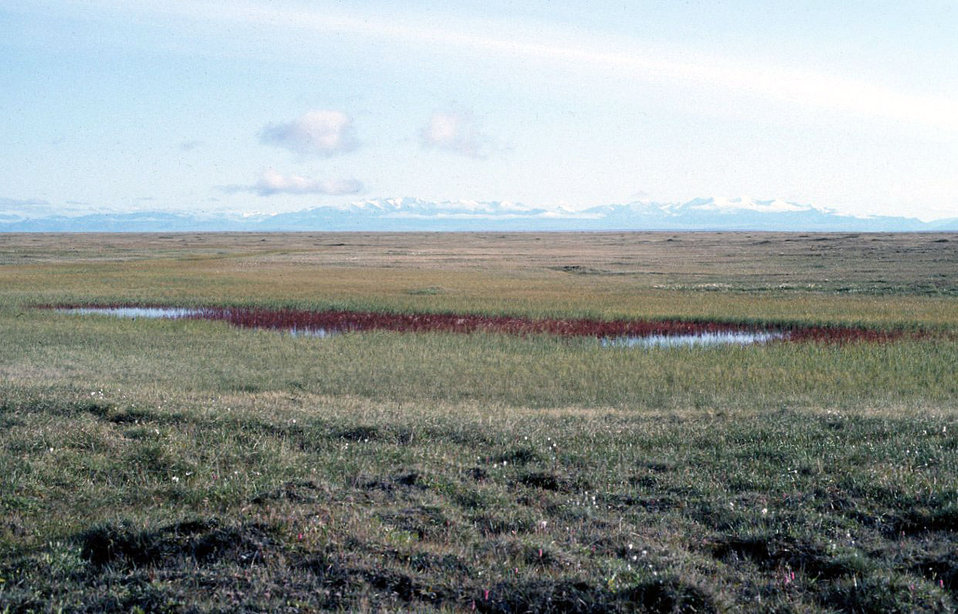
1002 Area: tundra

Arctic National Wildlife Refuge; Brooks Range